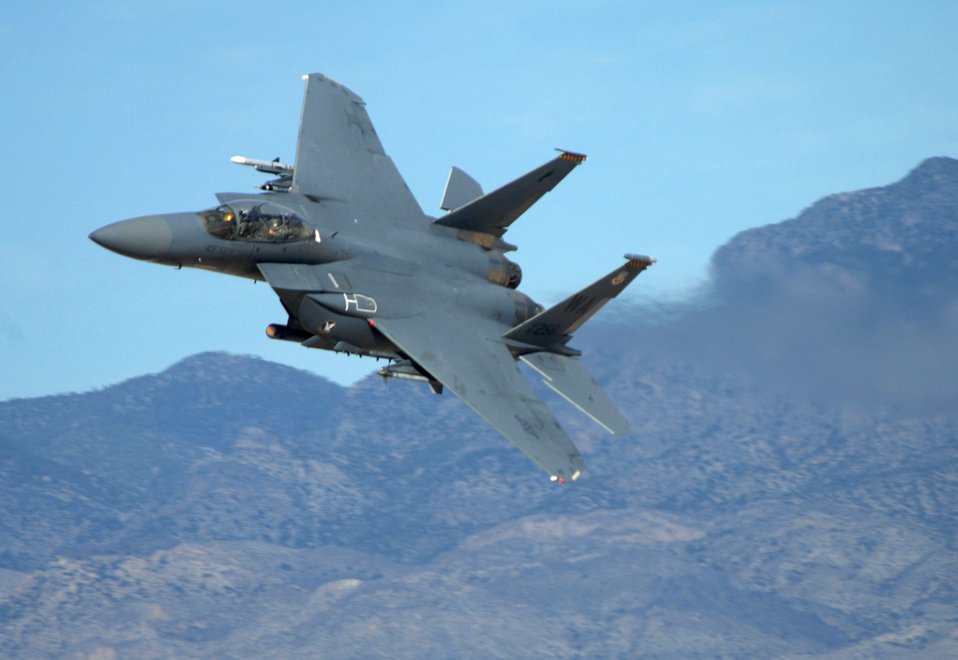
Show of force

An F-15 Eagle assigned to Nellis Air Force Base, Nev., makes a high-speed pass during the firepower demonstration Sept. 14 at the Nevada Test and Training Range. The demonstration gave the general public a close-up and realistic view into the Air Force's ability to perform its wartime mission.